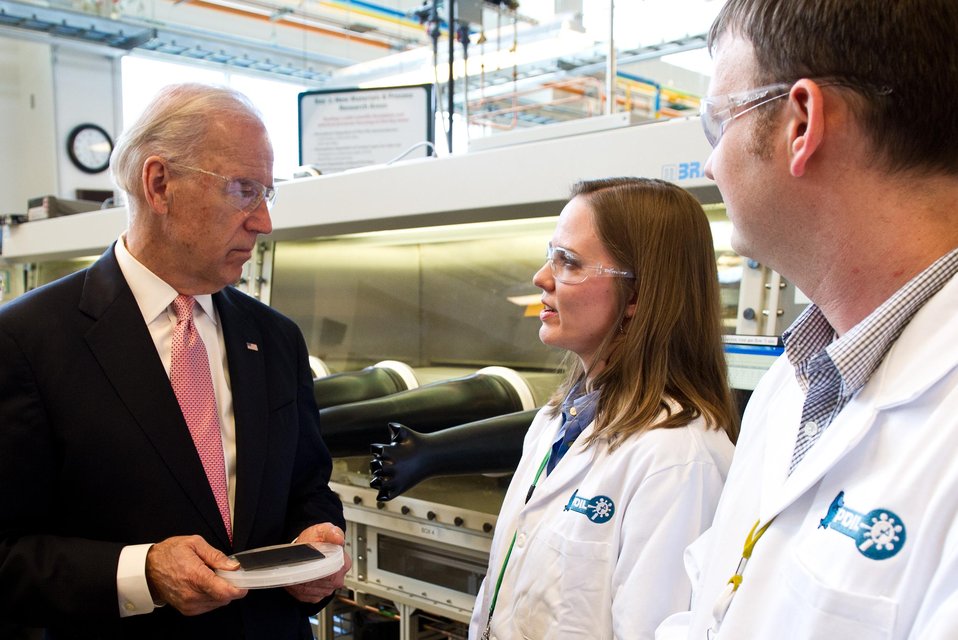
VICE PRESIDENT JOE BIDEN TAKES TOUR OF THE PROCESS DEVELOPMENT AND INTEGRATION LABORATORY AT NATIONAL RENEWABLE ENERGY LABORATORY ON MAY 20,2011.